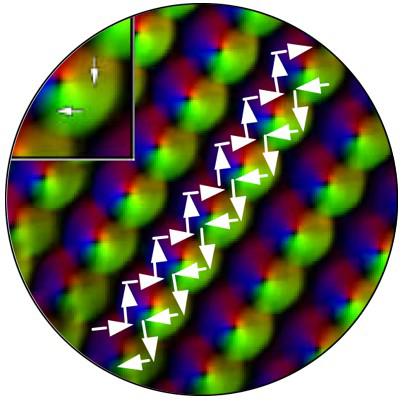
OFF-AXIS ELECTRON HOLOGRAPHY TO IMAGE MAGNETIC INDUCTION VECTORS IN NI NANODOTS.

BROOKHAVEN NATIONAL LABORATORY IS CONTRIBUTING TO THE NATIONAL PROGRAM IN NANOTECHNOLOGY, BOTH INDIVIDUALLY AND IN COLLABORATION WITH UNIVERSITIES AND OTHER NATIONAL LABORATORIES. THE INITIATIVE ENCOMPASSES A BROAD RANGE OF SCIENCE AND TECHNOLOGY, RANGING FROM TINY MICROCHIP DEVICES TO NEW 'ATOMIC' FORMS OF MATERIALS TO NEW PHENOMENA SUCH AS QUANTIZED ELECTRONIC AND MAGNETIC PHENOMENA IN ULTRA-THIN FILMS OR ORGANIC MOLECULES.